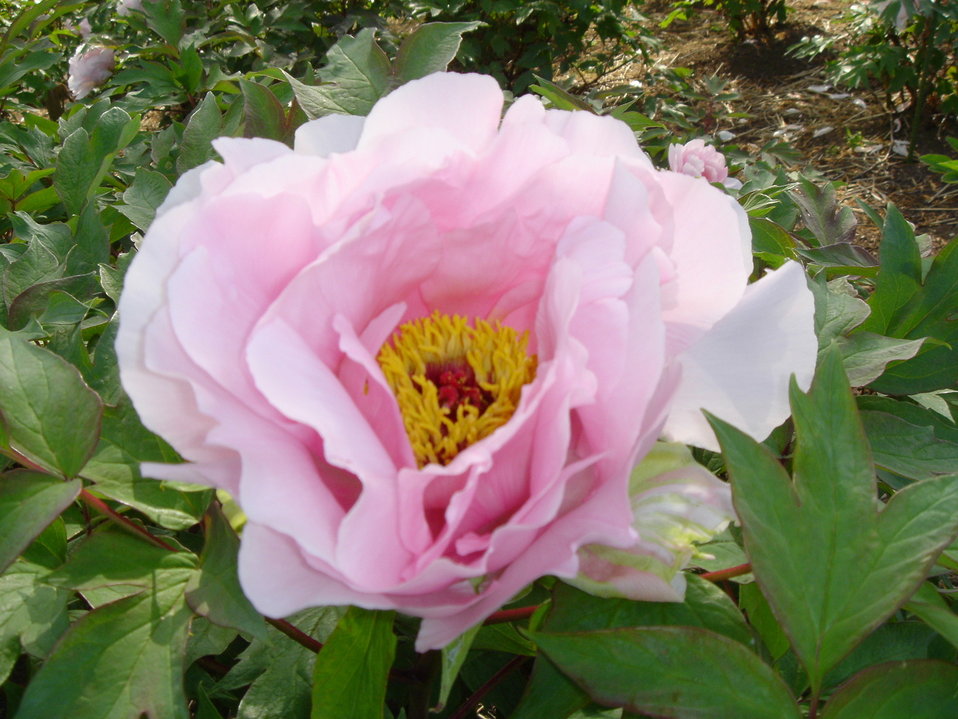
Paeonia suffruticosa8